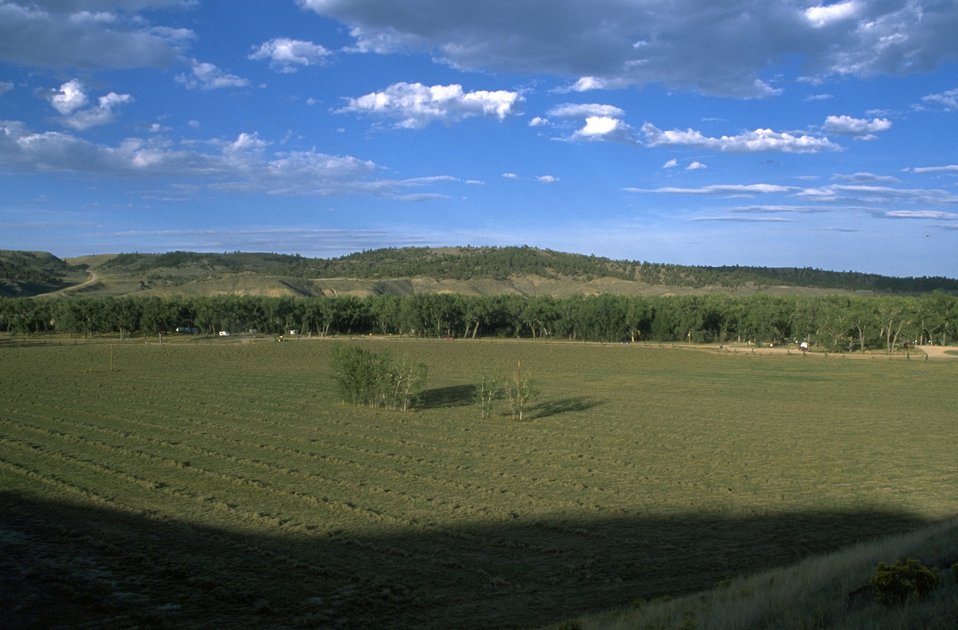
Kipp Recreation Area